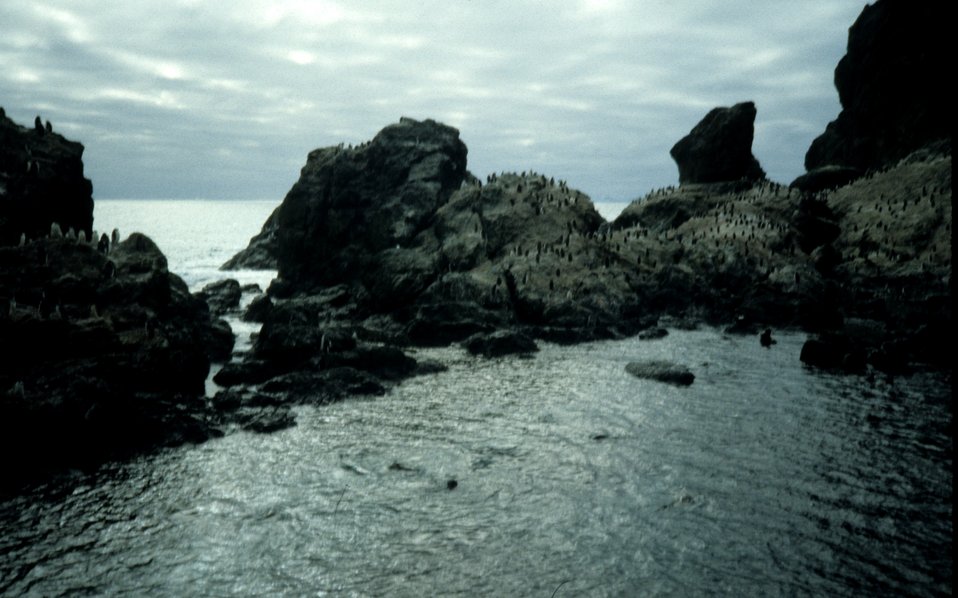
A white morph giant petrel savenges on the carcass of a fur seal pup, seen in the foreground. The pups eyes are missing, indicating that this was a possible entry point for the scavenging animal.